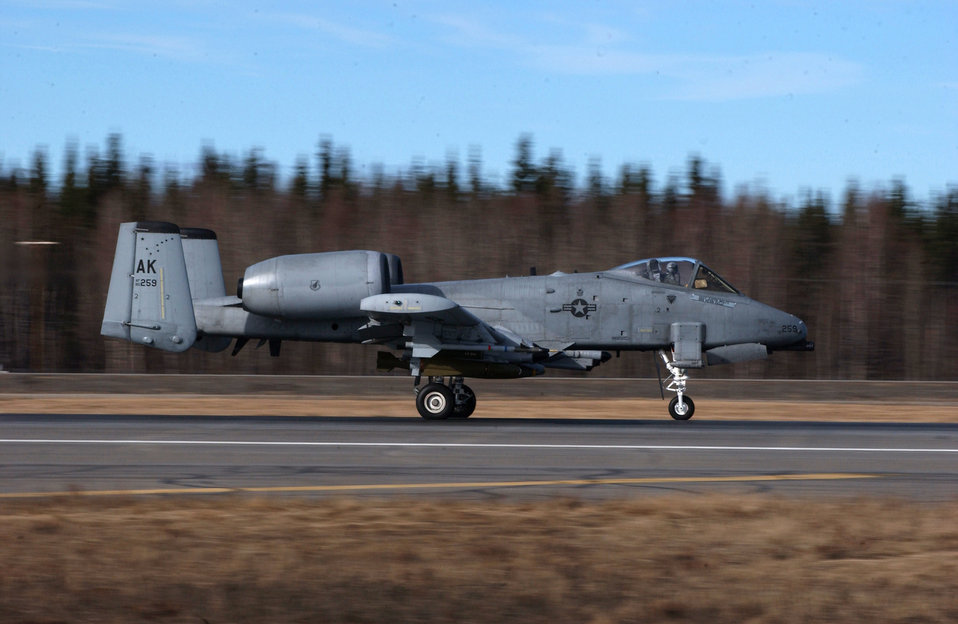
Alaska A-10s are goin' to Georgia

An A-10 Thunderbolt II with the 355th Fighter Squadron prepares to take off on the runway April 24 at Eielson Air Force Base, Alaska. Due to the Base Realignment and Closure list the A-10s are being relocated to Moody AFB, Ga.